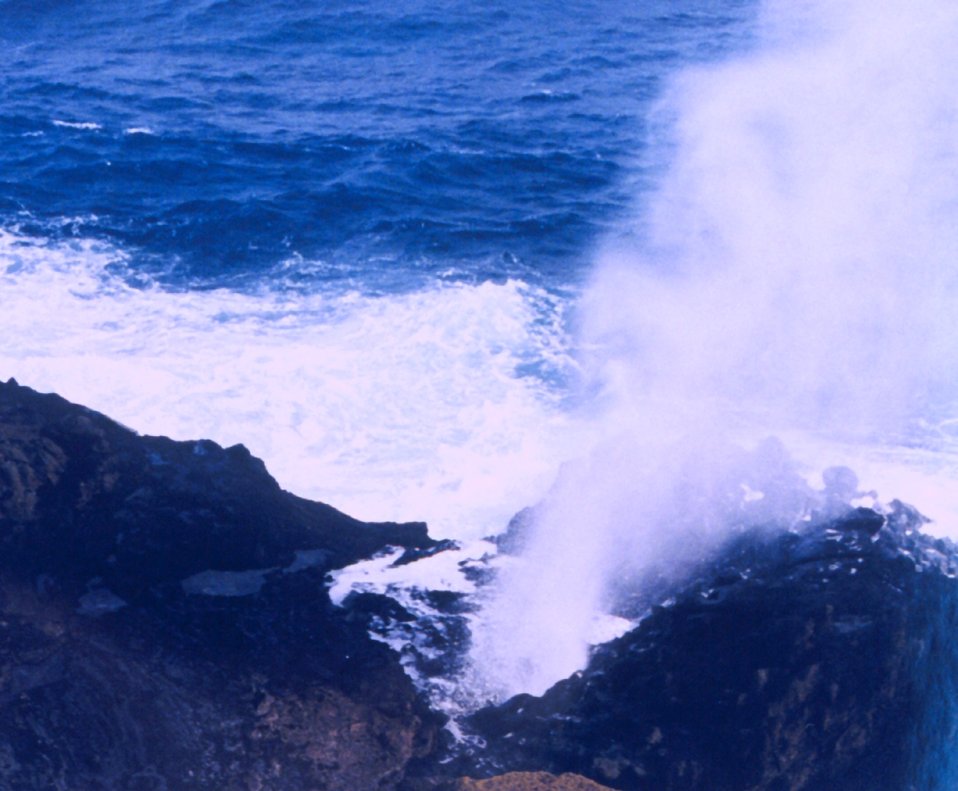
Halona Blowhole on the Kalanianaole Highway on Oahu's east side.